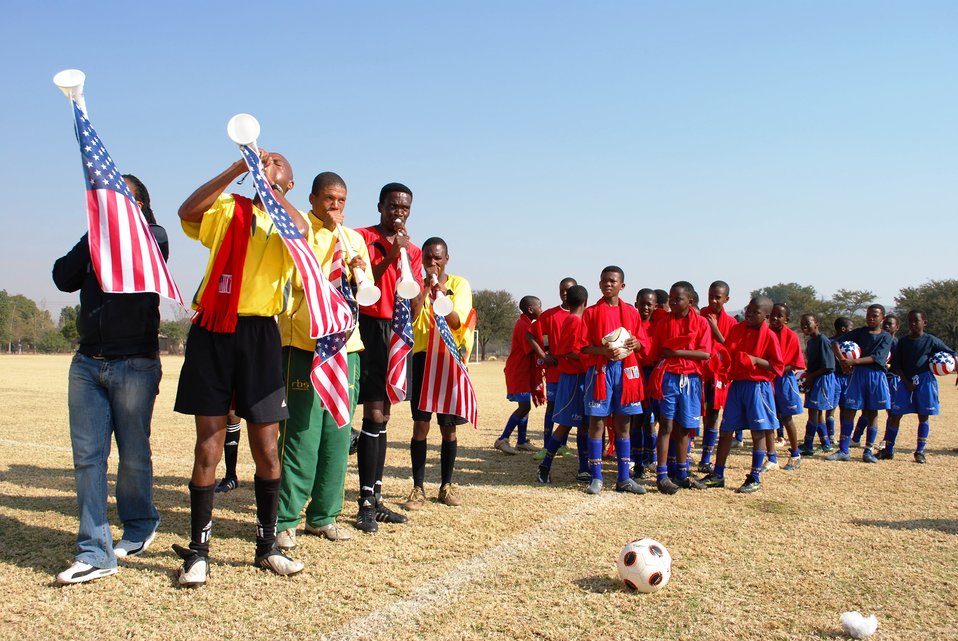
Referees play the vuvuzelas before two Under-11 Bafokeng Football Academy teams preview the FIFA 2010 World Cup match between the United States and Ghana by playing each other as the “U.S.” and Ghana” on June 25, 2010, in Rustenburg, South Africa. The game highlighted the development of rural soccer in South Africa, particularly in the Royal Bafokeng Nation, which consists of twenty-nine villages located in the Rustenburg Valley in the North West Province.